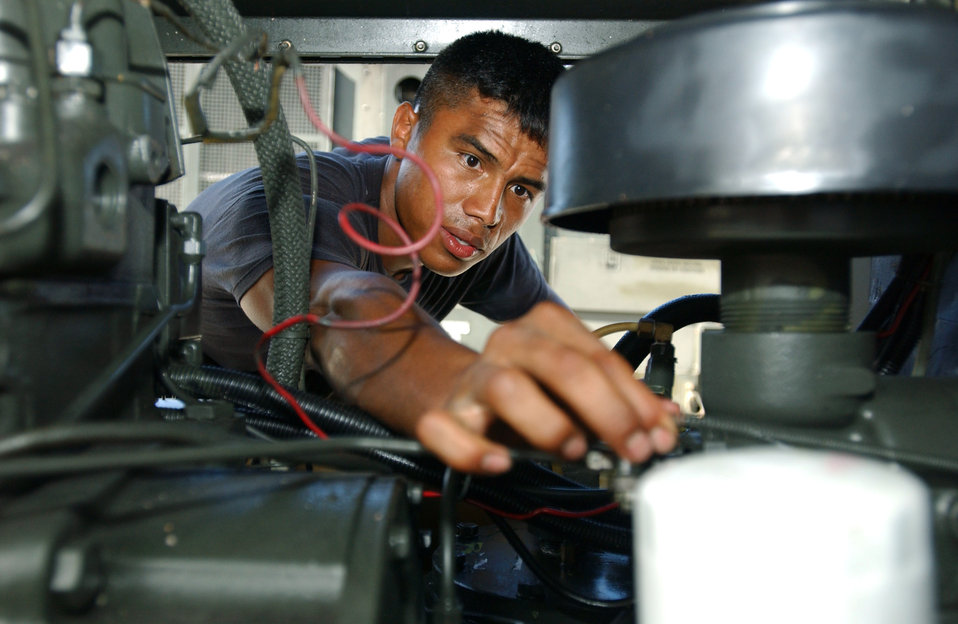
Air care

SOUTHWEST ASIA -- Airman Michael O'Rourke checks the throttle adjustment on an air compressor Jan. 28. Airman O'Rourke is assigned to the 40th Expeditionary Maintenance Squadron at a forward-deployed location. He is deployed from the 28th Maintenance Squadron at Ellsworth Air Force Base, S.D.